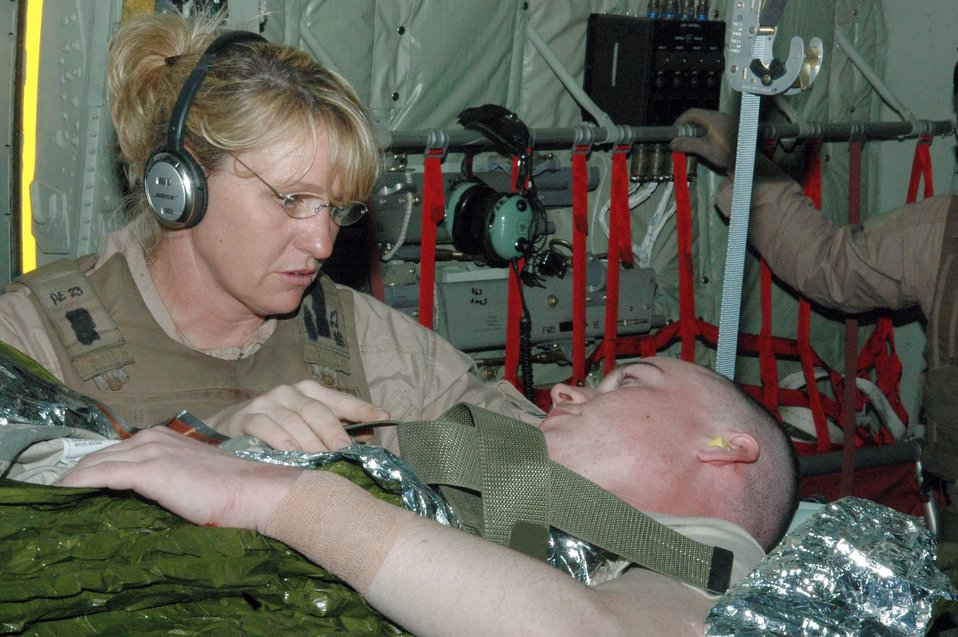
Out of harm's way

Capt. Lisa Causey cares for a litter patient on board a C-130 Hercules April 2 in Southwest Asia. She and four other medics and the C-130 aircrew made a 15-hour flight to four cities in Iraq and one air base in the Middle East. They airlifted 19 patients, 16 of whom were ambulatory, to the Persian Gulf, where most of the patients were transferred to a C-17 Globemaster III headed for Germany. Captain Causey is a 379th Expeditionary Aeromedical Evacuation Squadron second flight nurse. She is an Air National Guard member deployed from the 183rd Aeromedical Evacuation Squadron from Jackson, Miss.